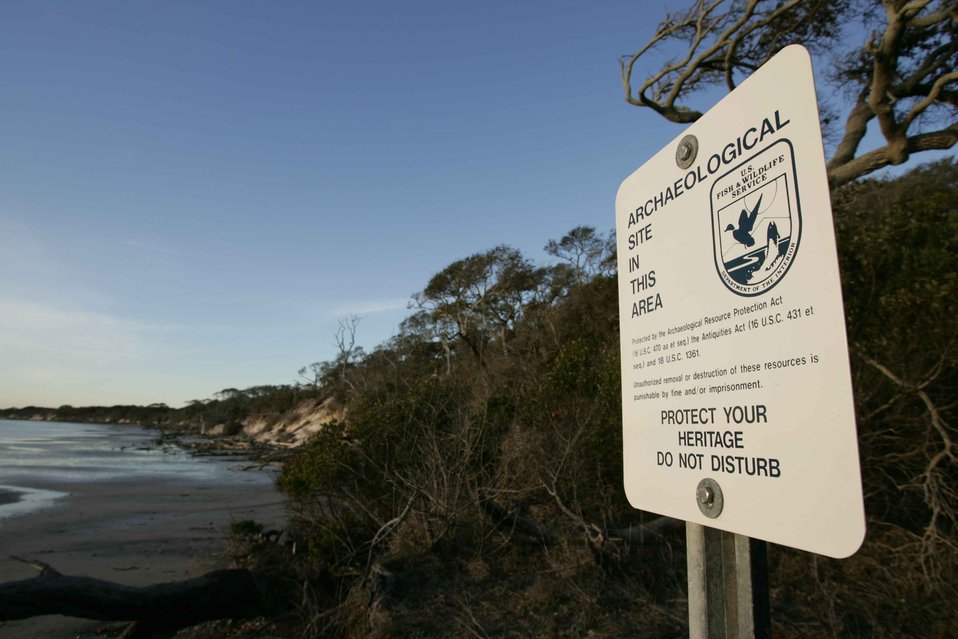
English:
Image title: Beautiful untouched coastline punctuated by archaeological sign the foreground Image from Public domain images website, http://www.public-domain-image.com/full-image/objects-public-domain-images-pictures/signs-public-domain-images-pictures/beautiful-untouched-coastline-punctuated-by-archaeological-sign-the-foreground.jpg.html